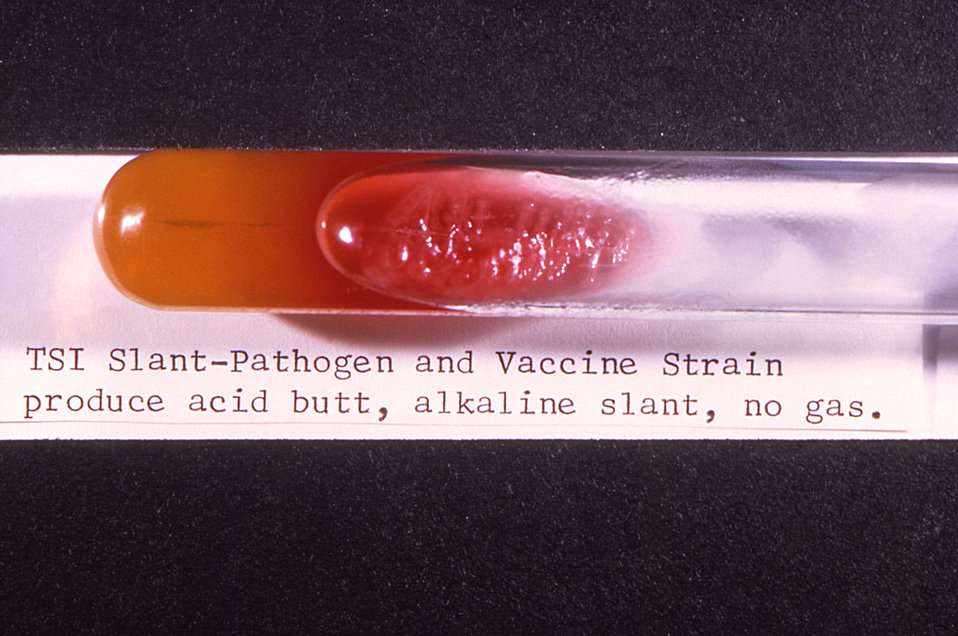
This image depicts a typical result in the case of Shigella flexneri and its vaccine hybrid, which had been used to conduct a triple sugar iron (TSI) test. Note that there was a reaction indicated by the presence of a red coloration in the slant region, indicating alkalinity, and a yellowish coloration in the butt region of the tube, indicating acidity, but without the production of gasses such as hydrogen sulfide or carbon dioxide.